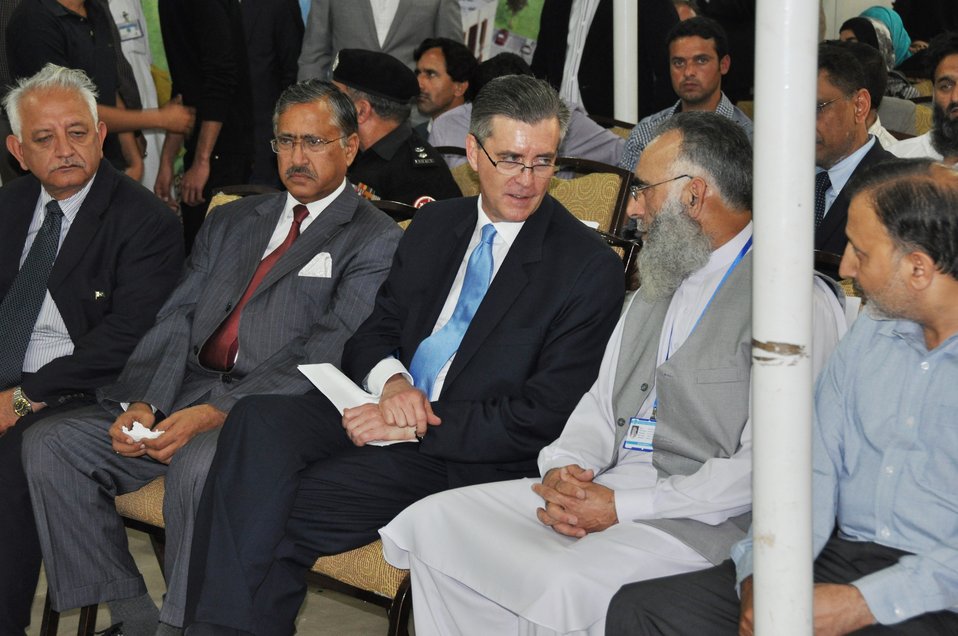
The United States Ambassador to Pakistan, Richard Olson broke ground for a U.S. funded construction of a new Faculty of Education building in Muzaffarabad, AJK. 01